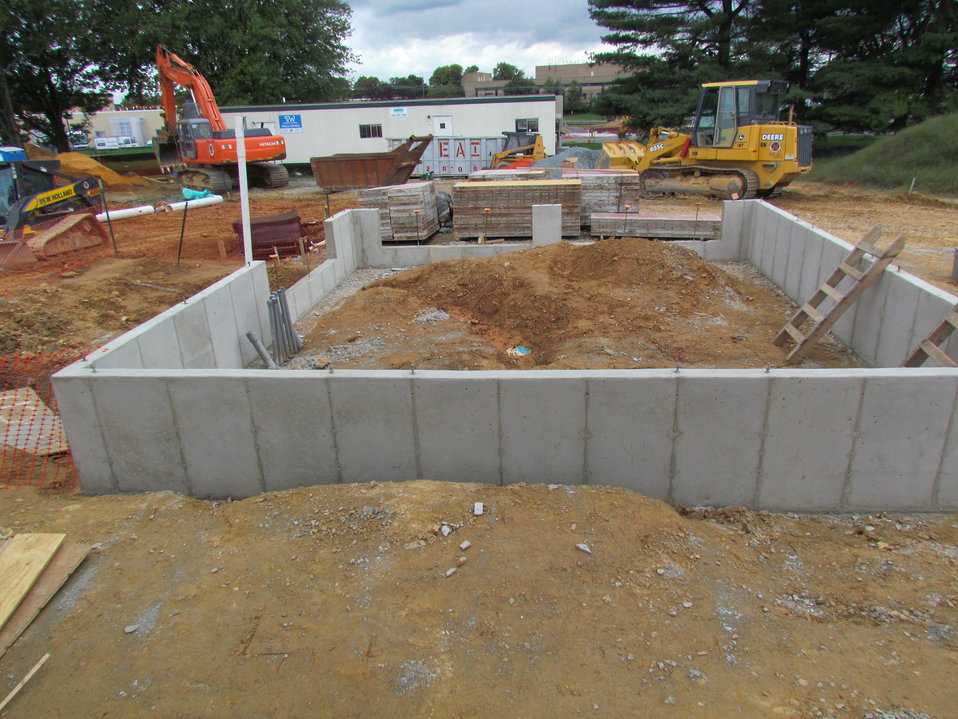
Net-Zero Energy Residential Test Facility - Photo showing completed concrete knee walls for detached garage. Photo was taken looking due west.